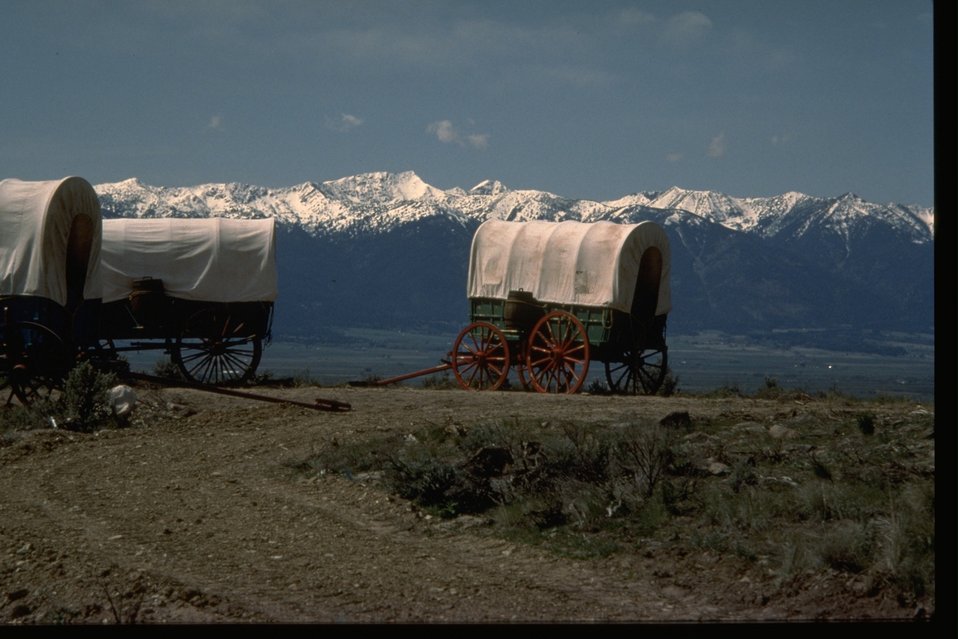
Wagons outdoors near the NHOTIC, with Blues in the background.